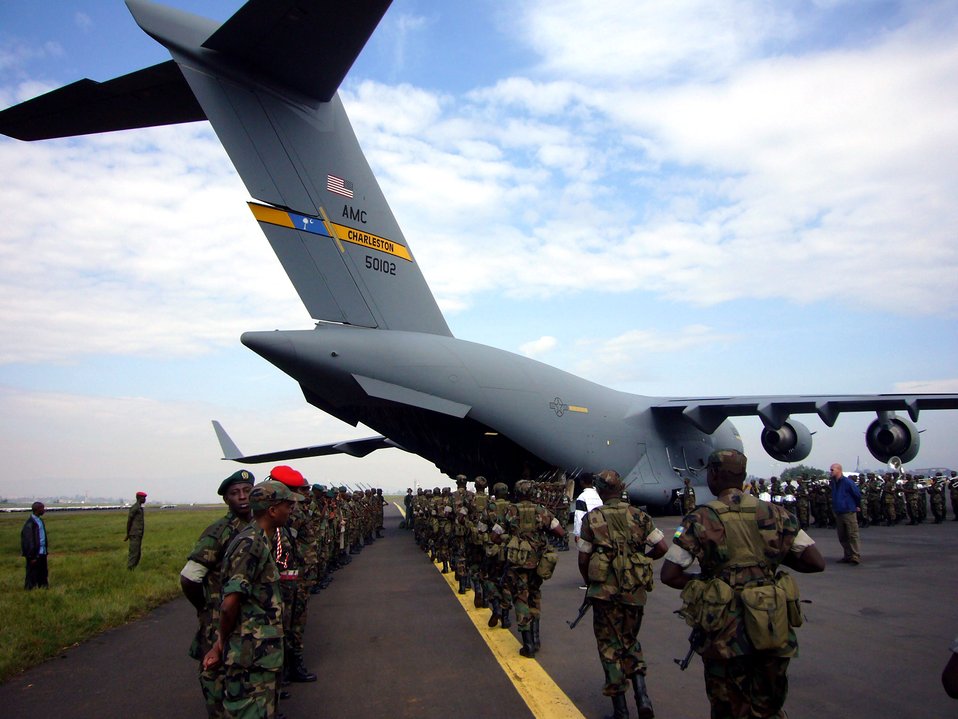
Air Force assists in Darfur troop movement

Rwandan soldiers march onto an Air Force C-17 Globemaster III Oct. 20 on their way to Darfur from Kigali, Rwanda. Airmen from Ramstein Air Base, Germany, and Charleston Air Force Base, S.C., are providing airlift support to the African Union effort in Darfur.